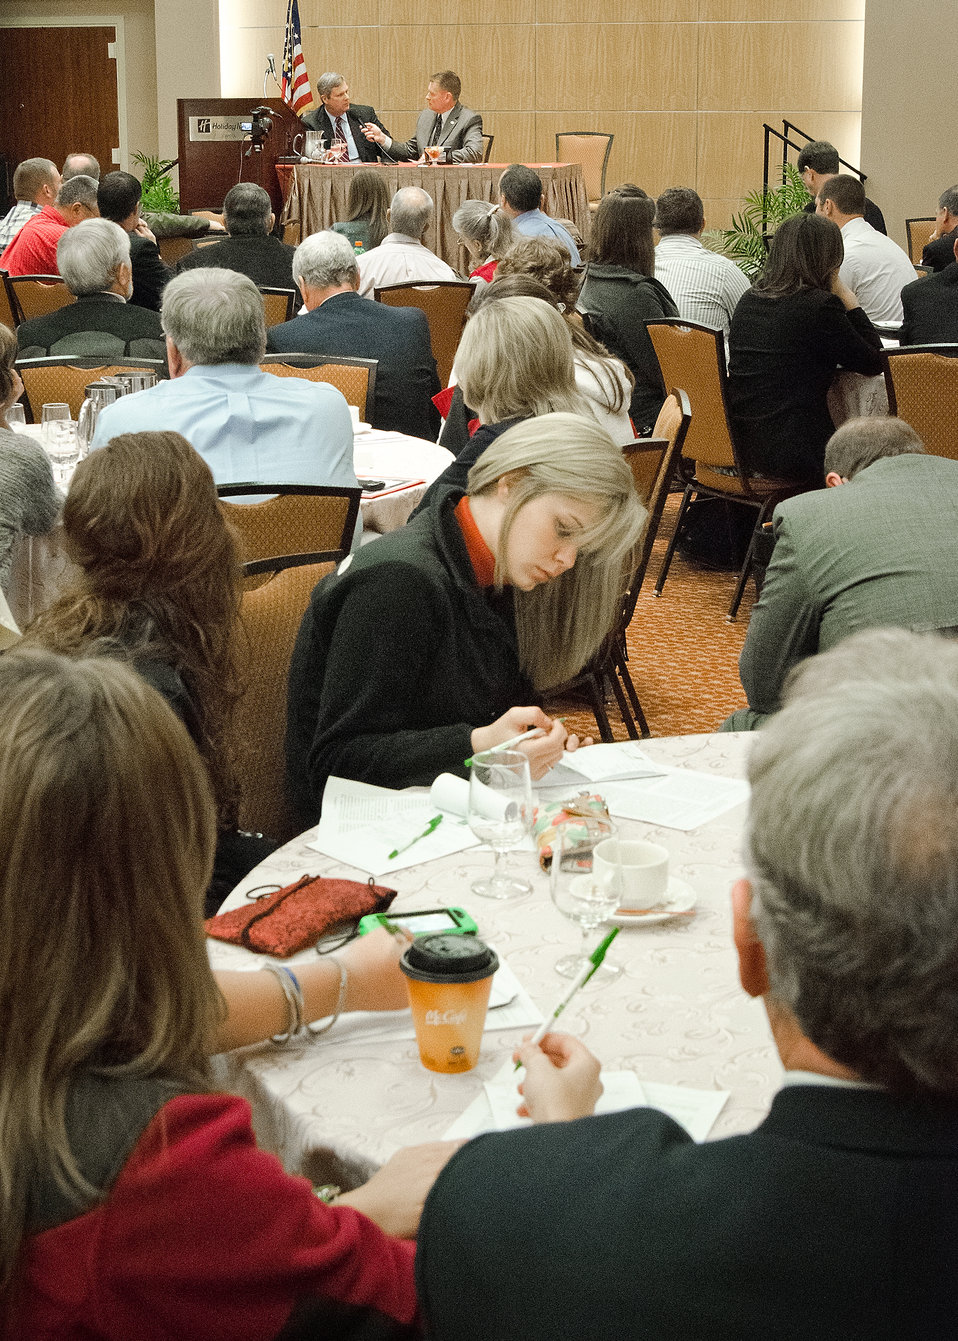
Agriculture Secretary Tom Vilsack (left) interviewed with Agritalk Host Mike Adams (right), during a meeting with the Missouri Farm Bureau in Washington, D.C., on Tuesday, March 20, 2012. Agritalk, The Voice of Rural America is a radio network based in St. Louis, Missouri reaching out to the American Mid-West.